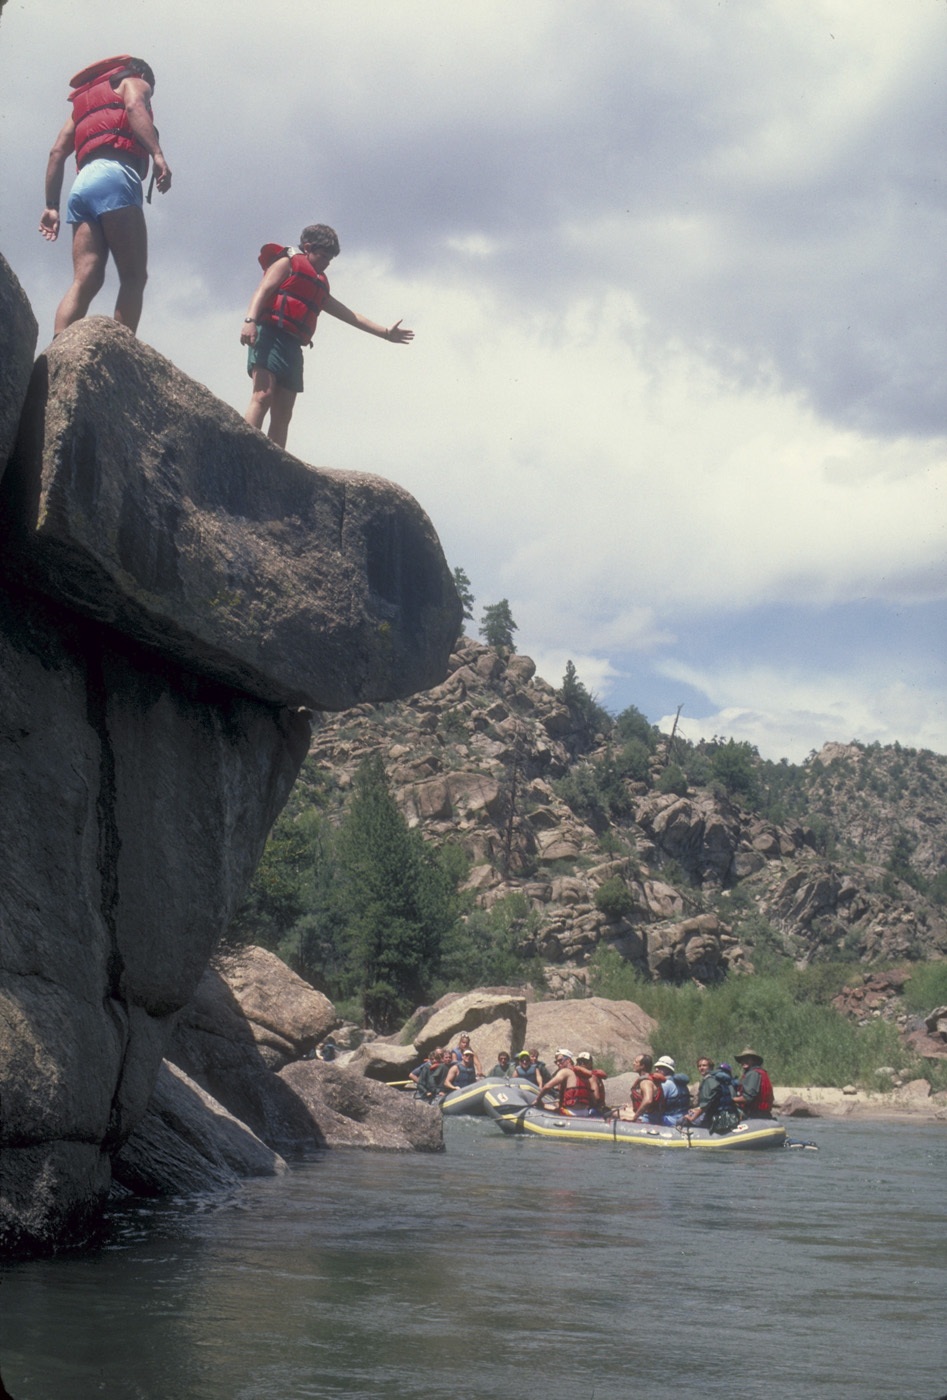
Rafting on the Colorado River